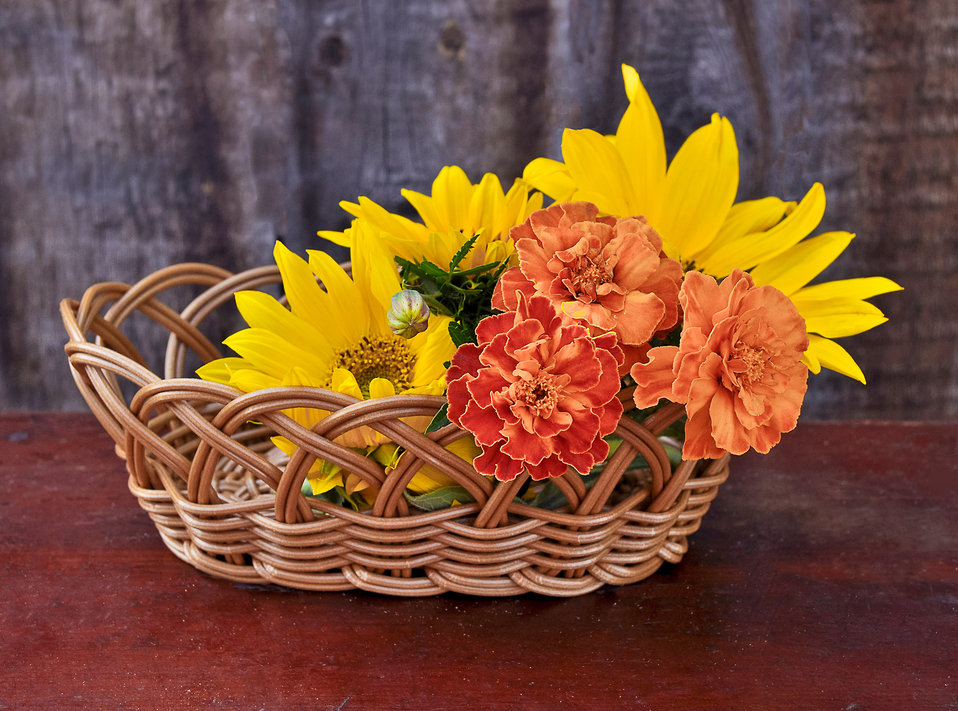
Baskets of flowers sunflower

Flowers sunflowers in a wicker basket..